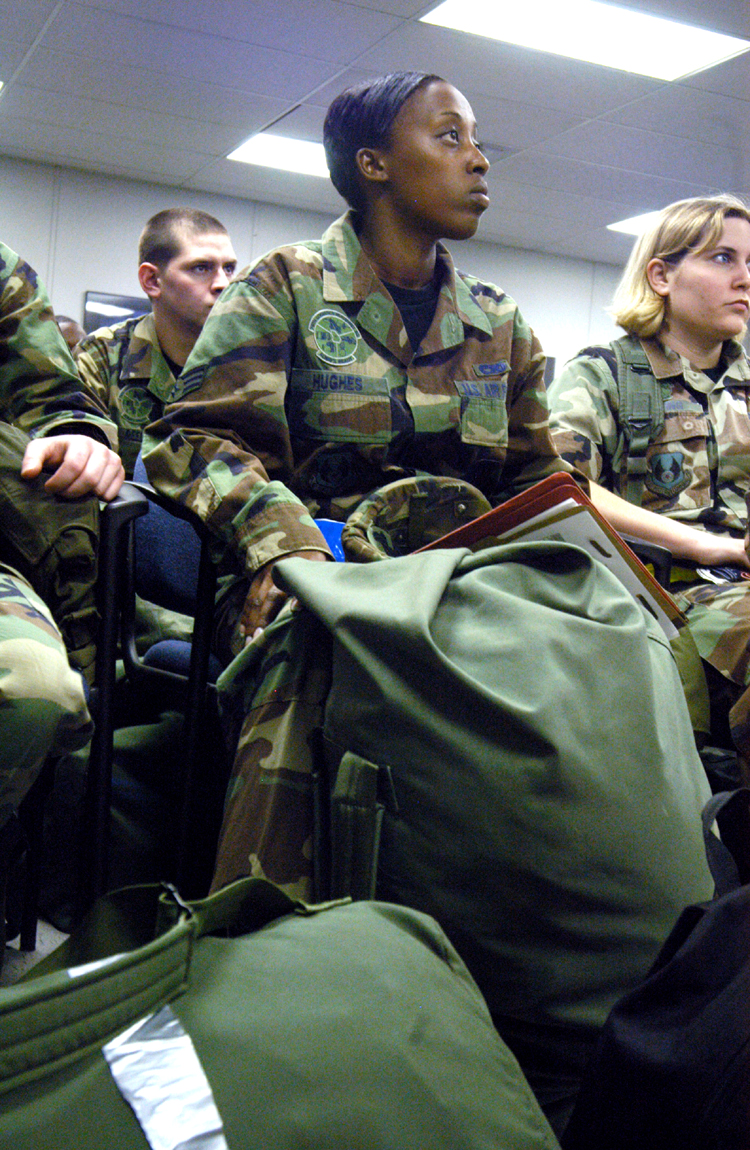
Practice makes perfect

ROBINS AIR FORCE BASE, Ga. -- Senior Airman Rachel Hughes listens to briefings at a simulated mobility processing line during a training exercise here recently. The exercise measures the overall effectiveness of servicemembers to perform technical and survival skills in combat environments.